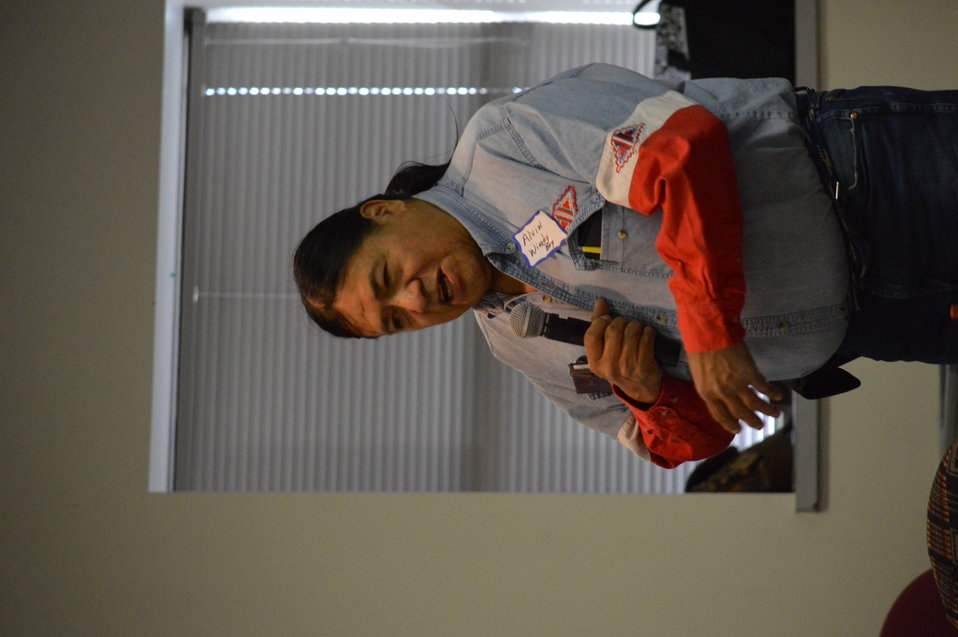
Eagle Summit III

Alvin Windy Boy's opening remarks at the Eagle Summit III in Denver, Colorado on March 20, 2014 at the Rocky Mountain Arsenal National Wildlife Refuge.